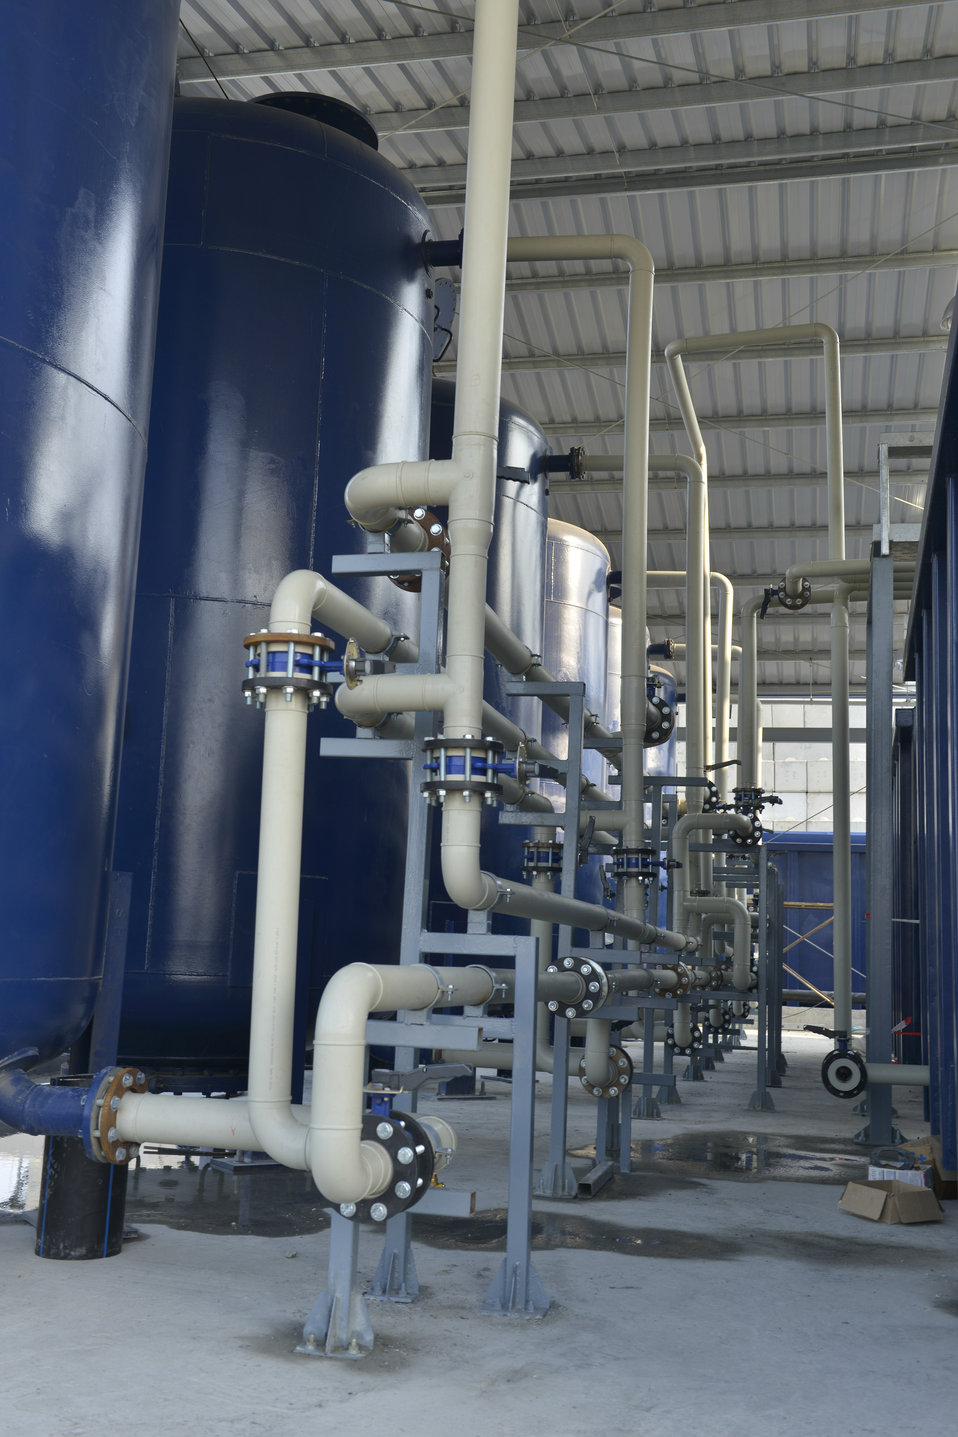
The liquid and vapor treatment plant/system constructucted north of the containment structure.

March 24, 2014.